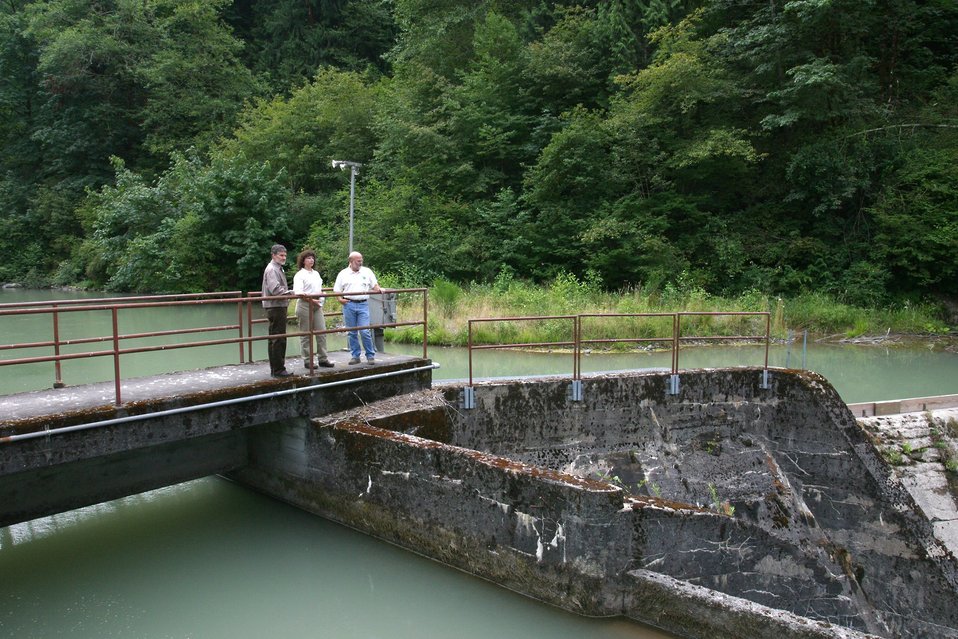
BLM Salem District Manager, Deis Williamson, Cascade Resouce Area Natural Resouce Advisor, Belle Smith and Realty Specialist Dick Todd stand on top of the Little Sandy Dam. The dam is scheduled to be removed in 2007. BLM will acquire the site after the dam is removed.